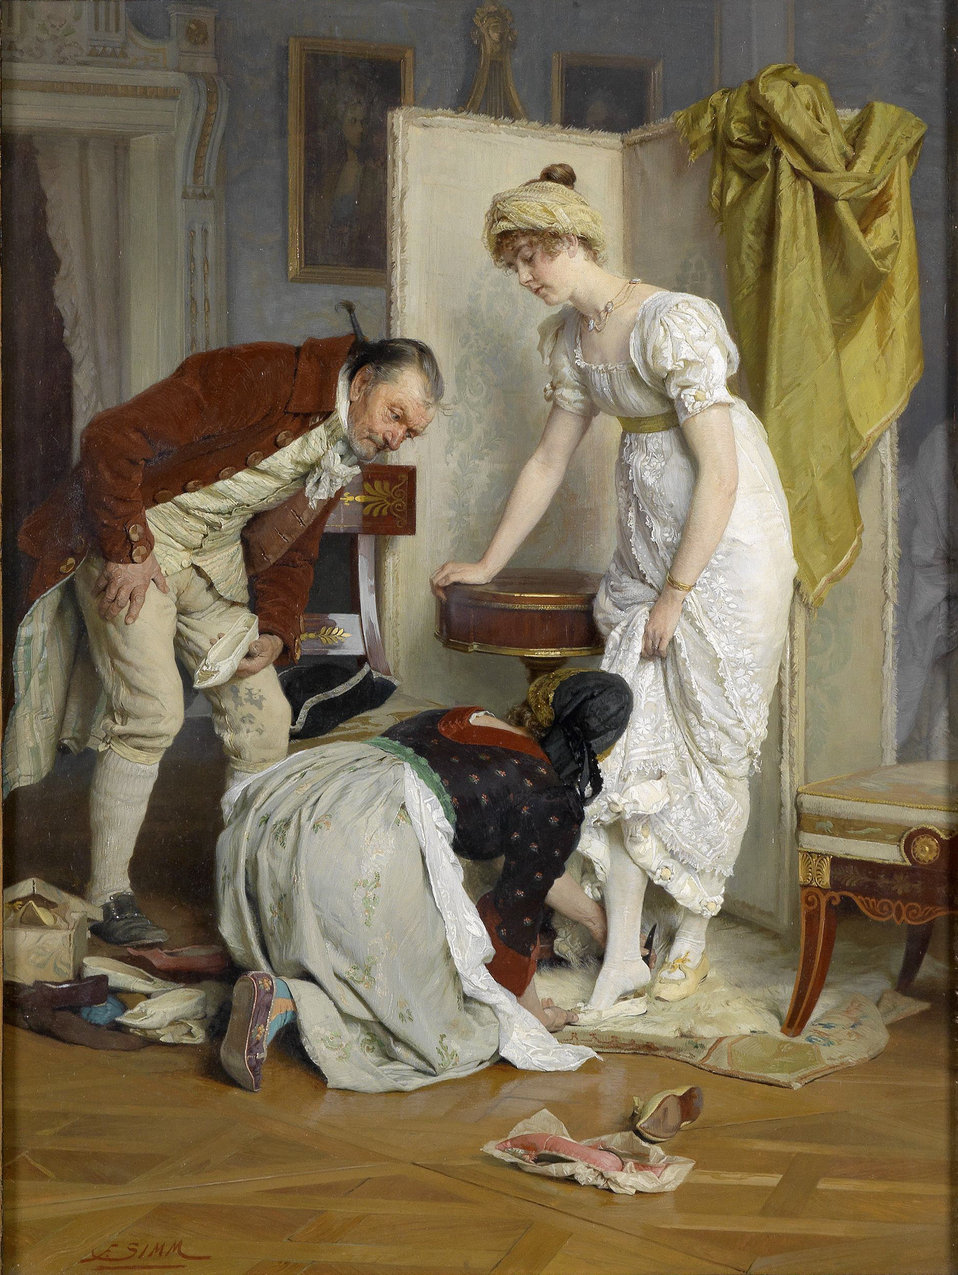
'Die Schuhprobe', rückseitig betitelt, signiert F. Simm, Öl auf Holz, 42 x 32 cm